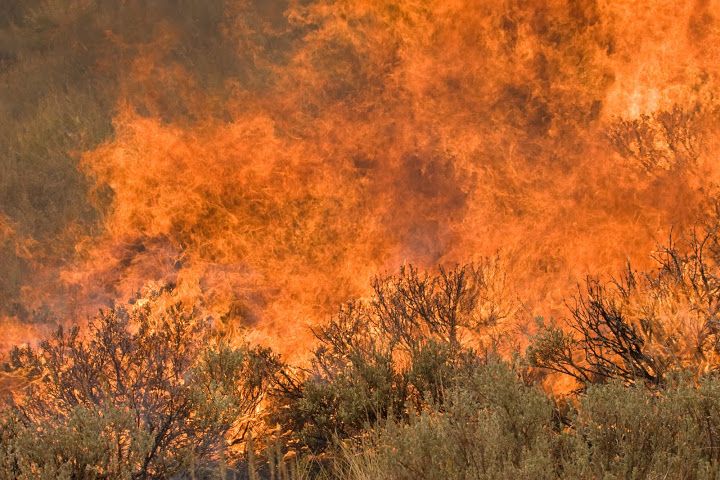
Castle Rock wildfire

In August and September 2007, a lightning strike sparked the 48,000-acre Castle Rock wildfire near Ketchum, Idaho, threatening million dollar homes in the Sun Valley area. Cheatgrass helped fuel the fire.